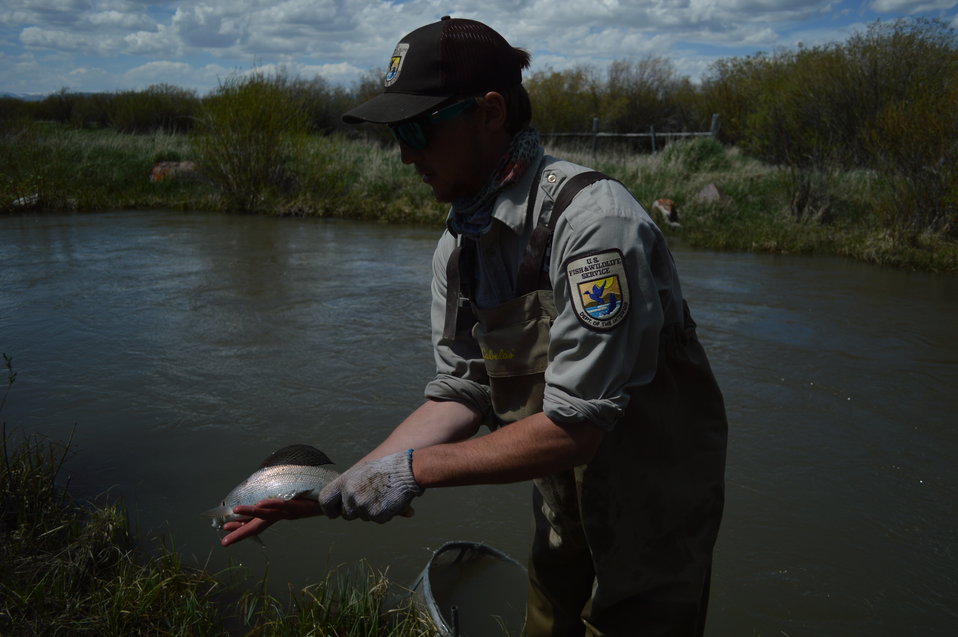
Regional Leadership Visit to Montana 2014